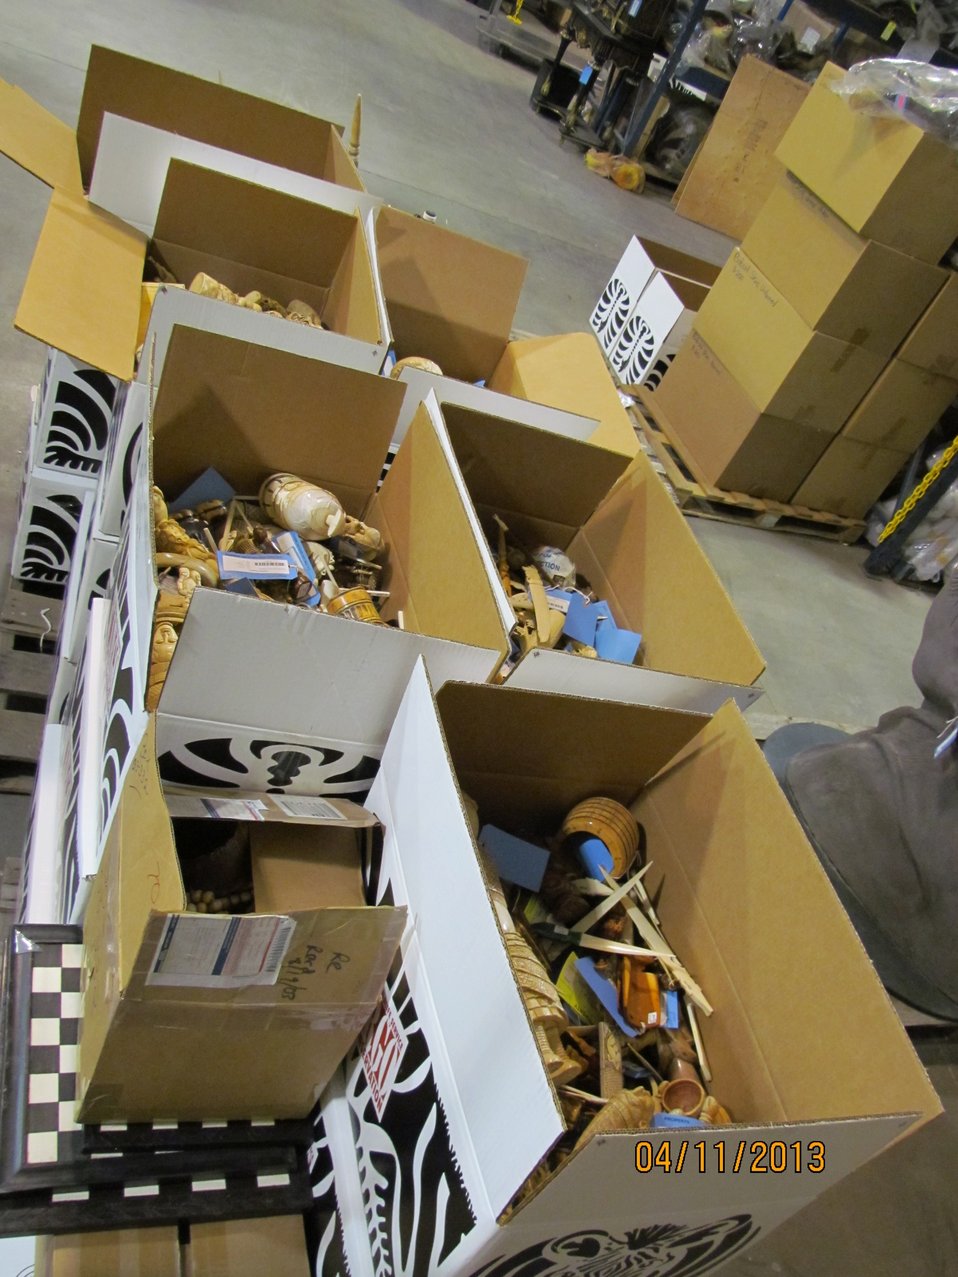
Six boxes of small ivory pieces